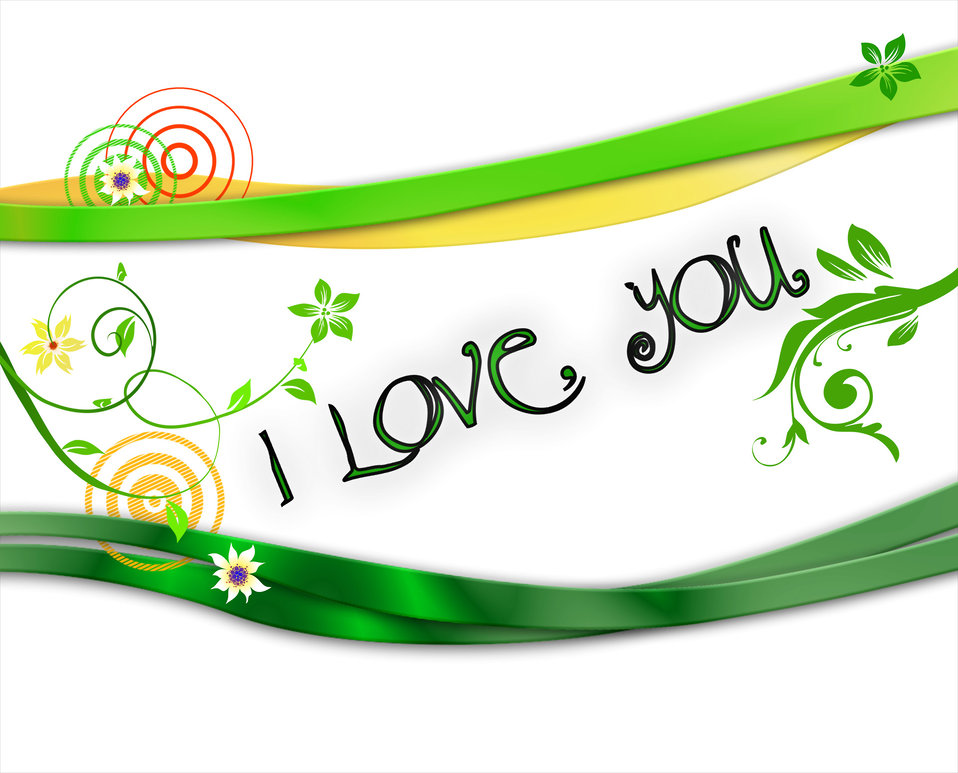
I love you

Declaration of love on spring background.